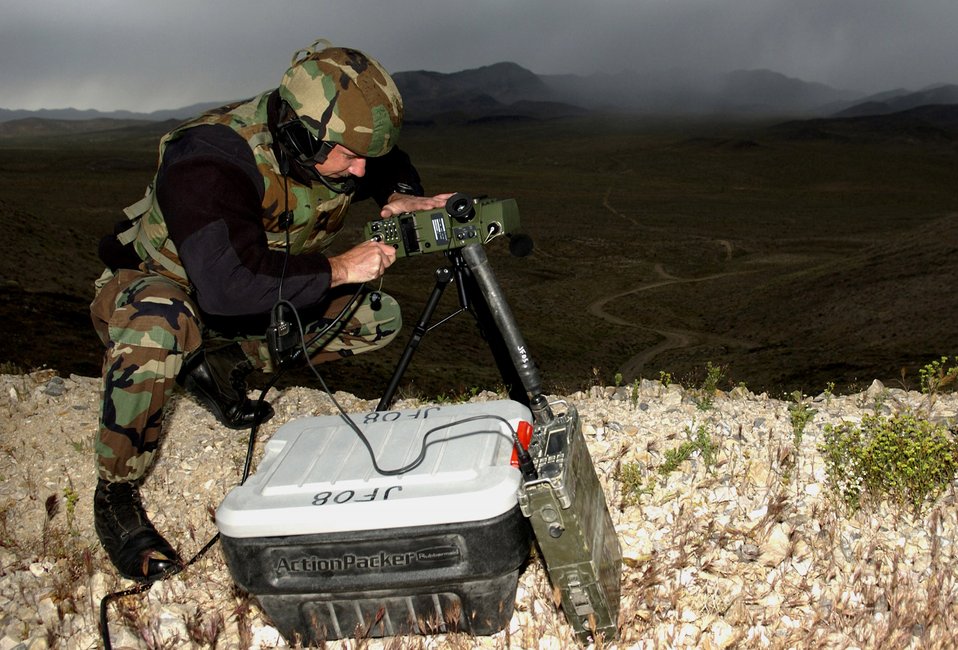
JTACs sharpen war skills in Nevada

Master Sgt. Craig Hillsman assembles a ground laser target designator that he will use to mark targets for incoming aircraft providing close-air support during a training exercise at the Nevada Test and Training Range. Sergeant Hillsman is a joint terminal attack controller instructor with the 6th Combat Training Squadron at Nellis Air Force Base, Nev. A JTAC acts as a liaison between forces on the ground and aircraft working in support of those forces and provides target information prior to providing weapons release authority to the aircraft.